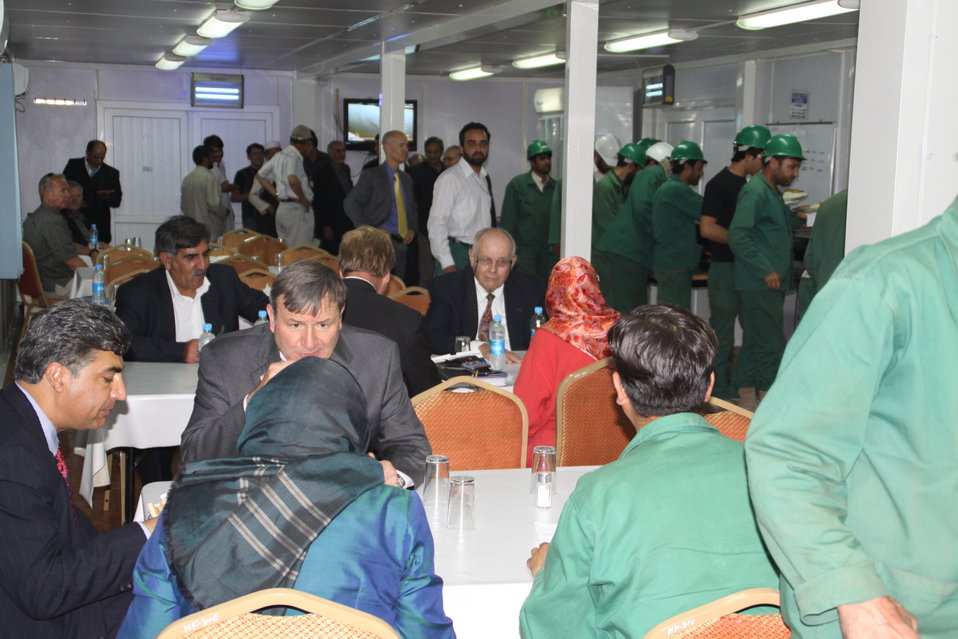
105 MW Tarakhil Power Plant Handover